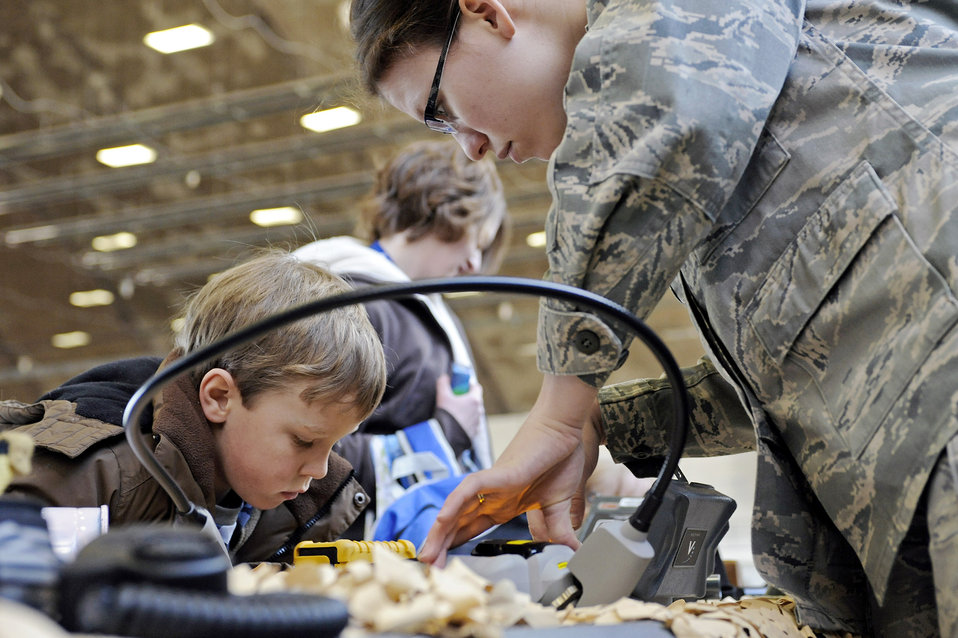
Ellsworth Airmen give children taste of deployment process

Senior Airman Carolyn Southards shows a military child how an identification kit can verify different substances March 13, 2010, at Ellsworth Air Force Base, S.D. The focus of the event was to give families of Airmen a better understanding of what it means to deploy. Airman Southards is a 28th Civil Engineer Squadron emergency management journeyman.